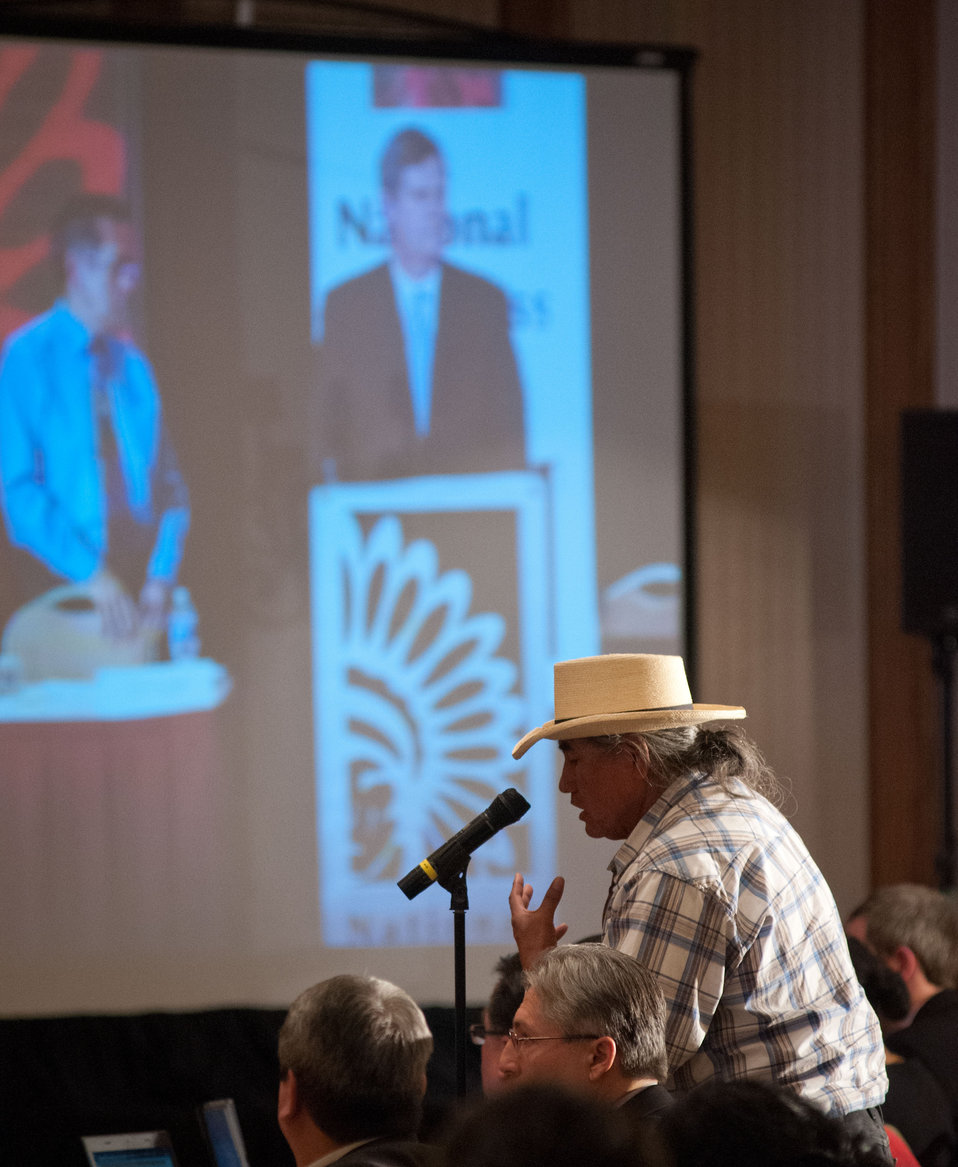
Agriculture Secretary Tom Vilsack (in the room and seen on right of screen) listened to and agreed with the Owens Valley Paiute Shoshone band of Indians board of trustees chairman (standing), that the U.S. Department of Agriculture (USDA) Forest Service has a role in ensuring a healthy Sierra Nevada mountain range ecosystem, and the importance the Forest Service puts into forest planning and management to address ecological concern; at the National Congress of American Indians Tribal Nations Legislative Summit at L’Enfant Plaza Hotel in Washington, D.C., on Wednesday March 7, 2012. Secretary Vilsack has made improving relations with Native American Tribes a priority by creating the Office of Tribal Relations and directed all U.S. Department of Agriculture (USDA) agencies to be more aware of tribal issues and engage in tribal consultation and collaboration. Secretary Vilsack reiterated USDA’s support to Native American communities with financial support for electric, broadband and wastewater infrastructure, and providing families and businesses with home loans and business grants. Secretary Vilsack emphasized USDA’s participation in the First Lady’s Lets Move in Indian Country initiative to combat childhood obesity in tribal communities.